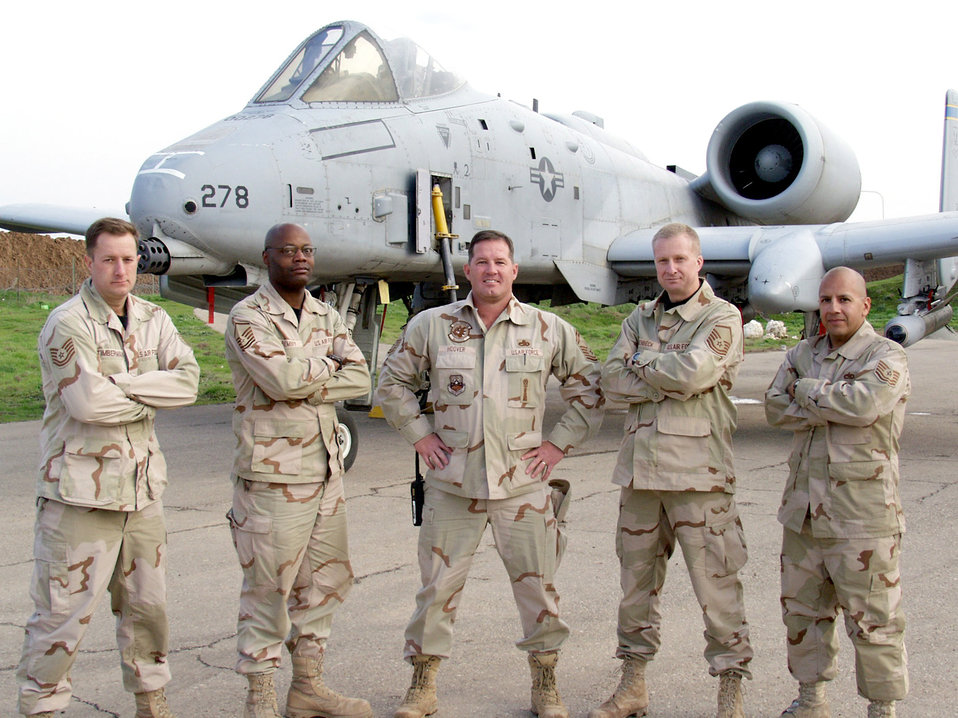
Band of brothers

KIRKUK AIR BASE, Iraq -- From left, Tech. Sgt. Edward Timberman, Master Sgt. Elbert Bembry, Senior Master Sgt. Benjamin Hoover, Master Sgt. Darrell Wiedenbeck and Tech. Sgt. Steven Sepeda stand near an A-10 Thunderbolt II here. The five A-10 maintainers served in both operations Desert Storm and Iraqi Freedom during their careers.